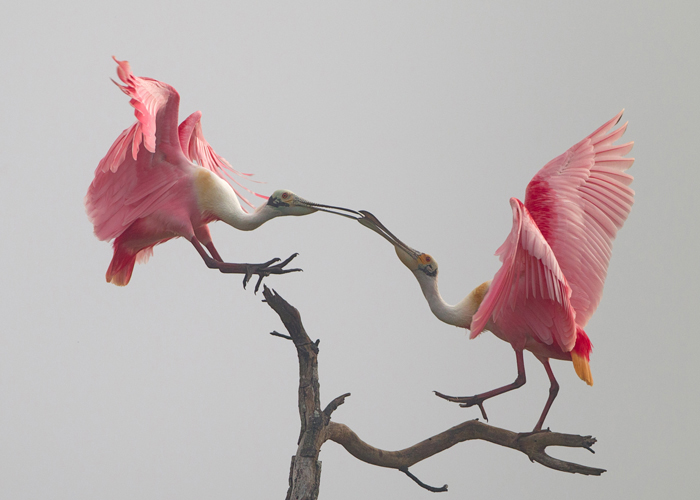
roseate spoonbill courtship dance

High Island, Gulf Coast of Texas